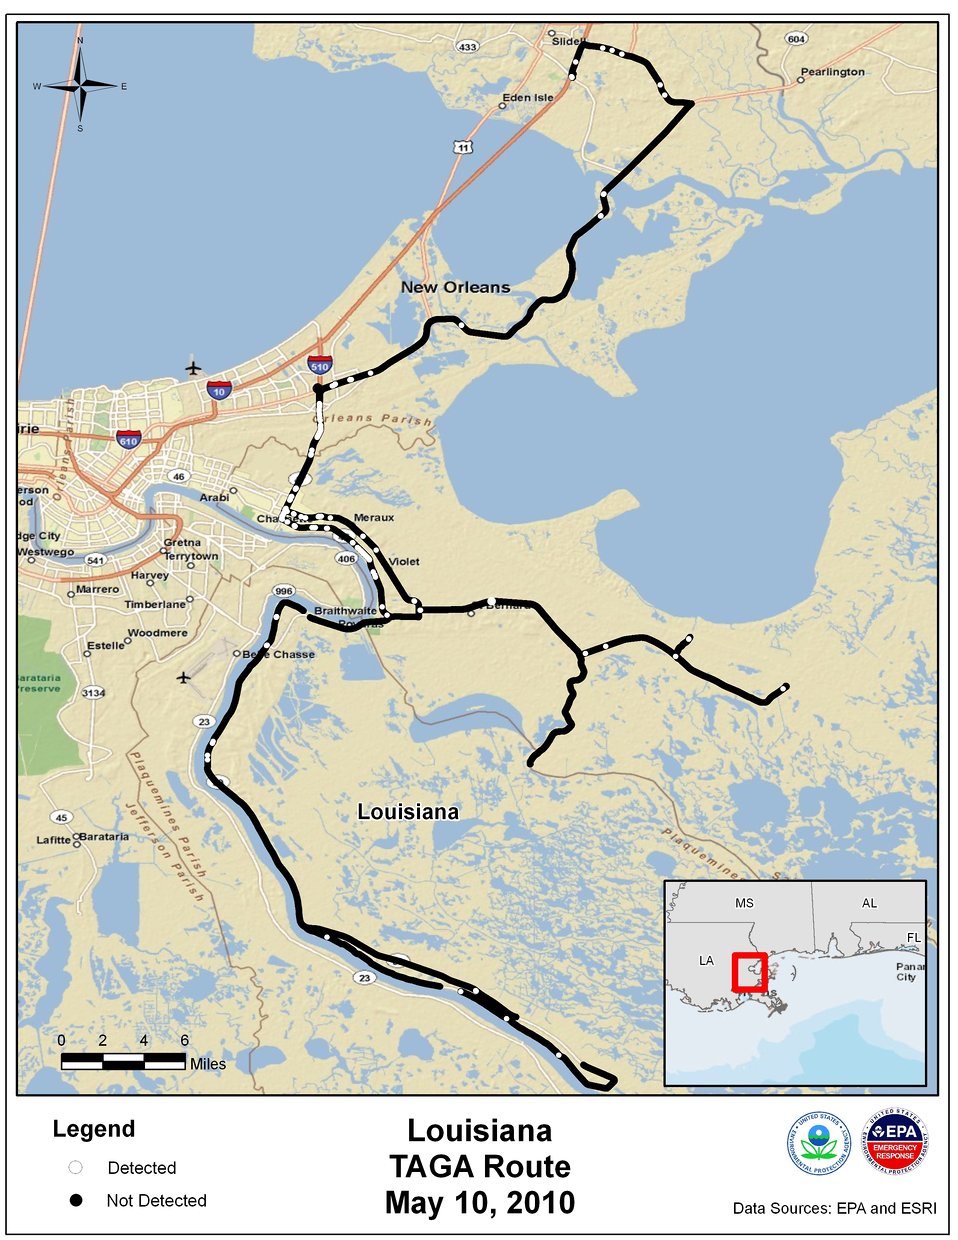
EPA TAGA Air Monitoring Locations May 10, 2010